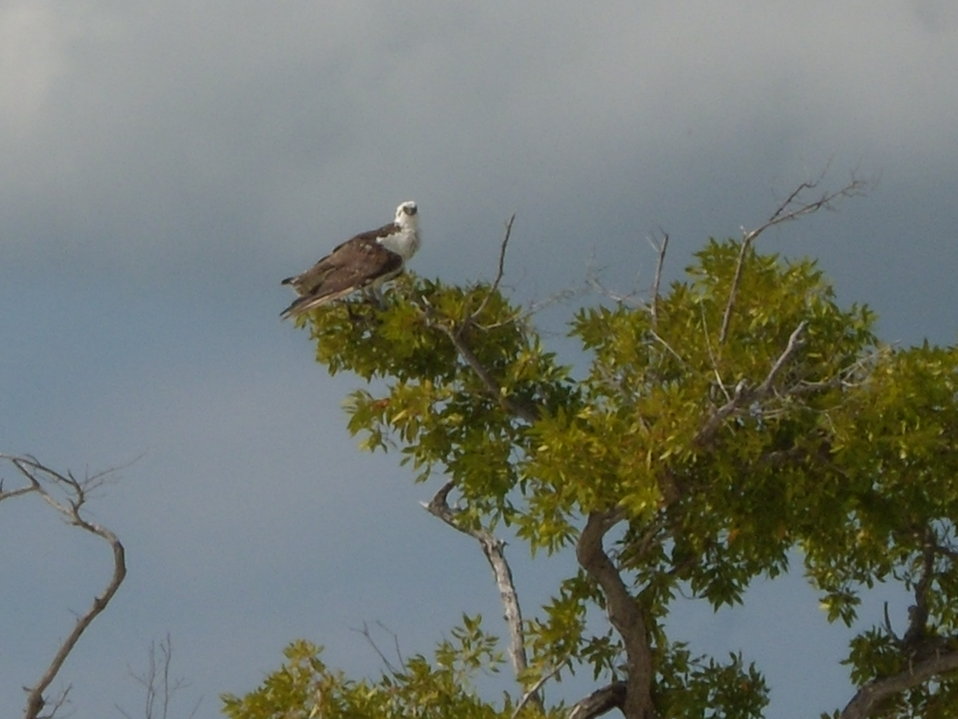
Osprey in small beachside tree

On Great Inagua Island.